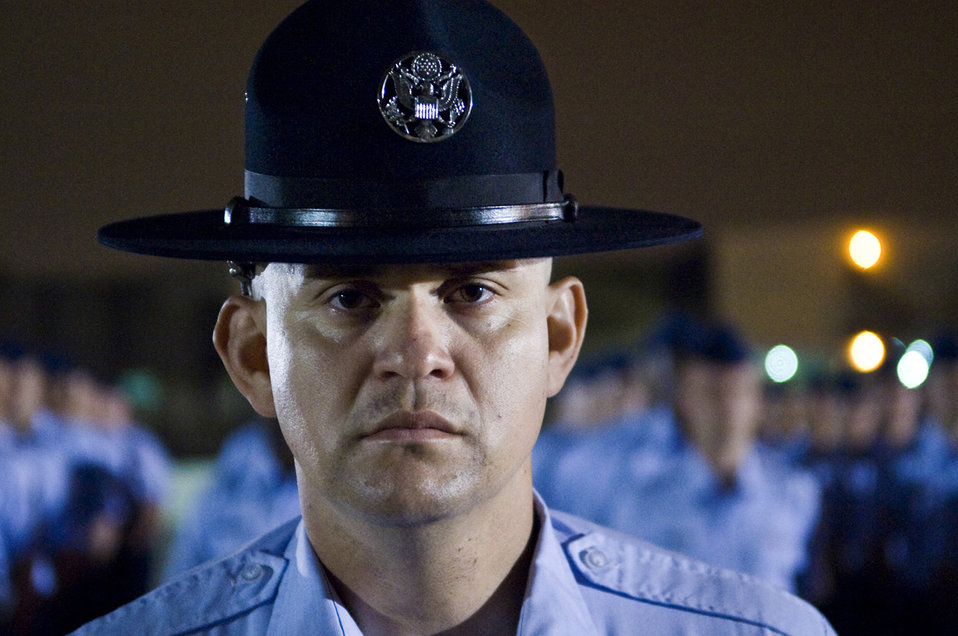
Graduation day

Tech. Sgt. Carbajal prepares his flight for graduation from Basic Military Training May 1 at Lackland Air Force Base, Texas. Sergeant Carbajal is a 324th Training Squadron military training instructor.